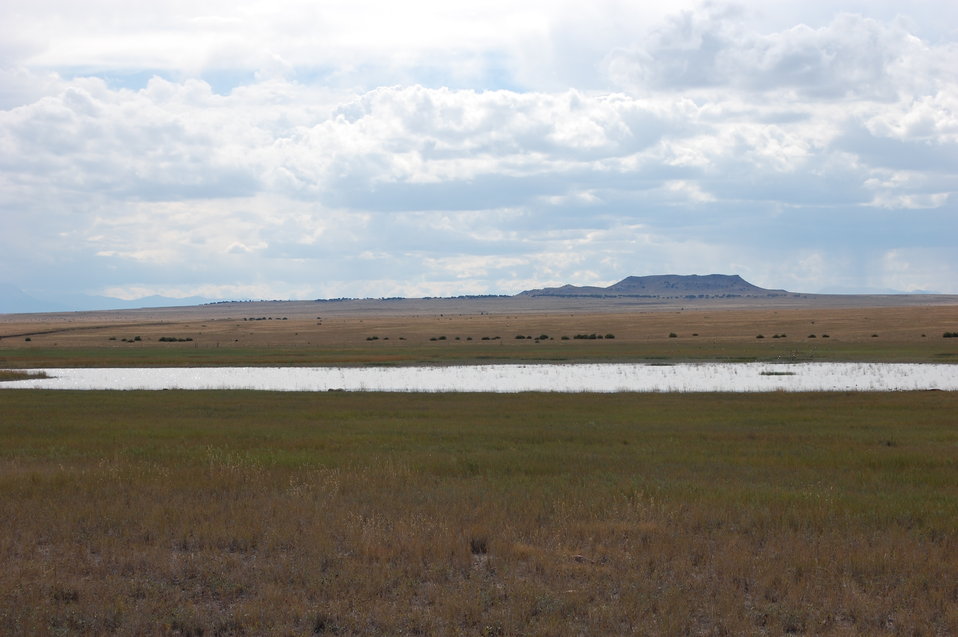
Restored Playa Basin in SE Colorado